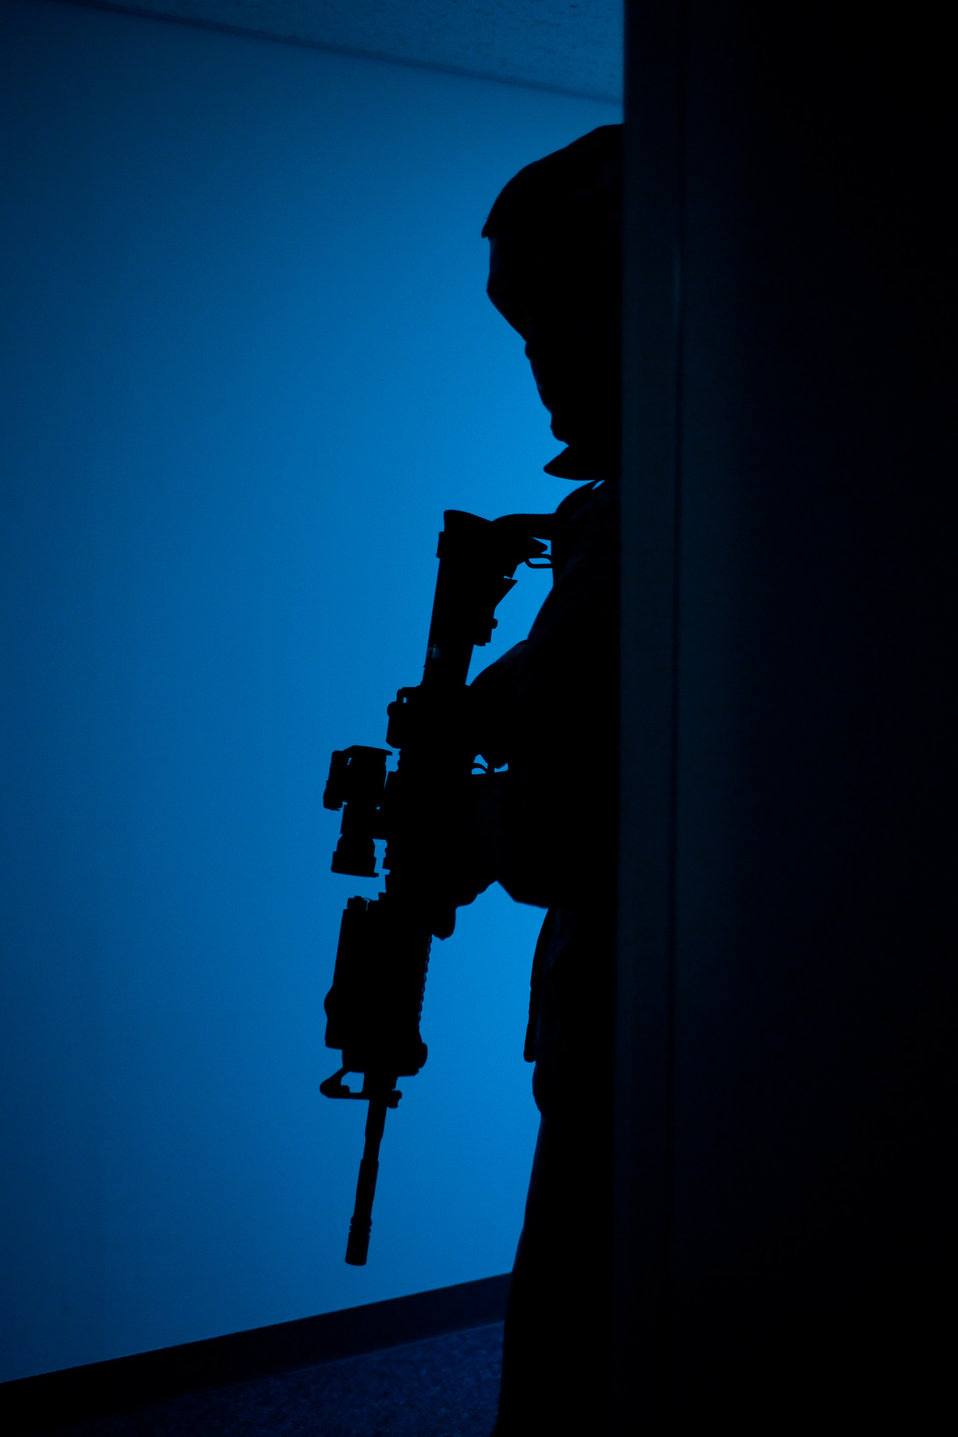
I've got you covered!

Airman 1st Class Limuel Beltran watches his wingman's back May 24, 2010, during a simulated robbery at Yokota Air Base, Japan, as part of an operational readiness exercise. Airman Beltran is a member of the 374th Security Forces Squadron at Yokota AB.